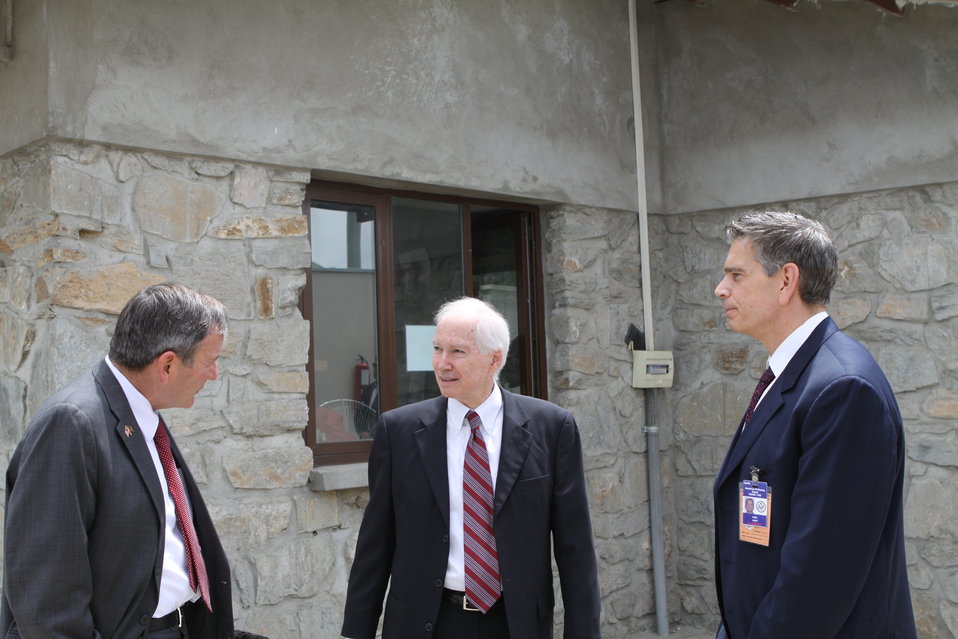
100526 AUAF Graduation 014